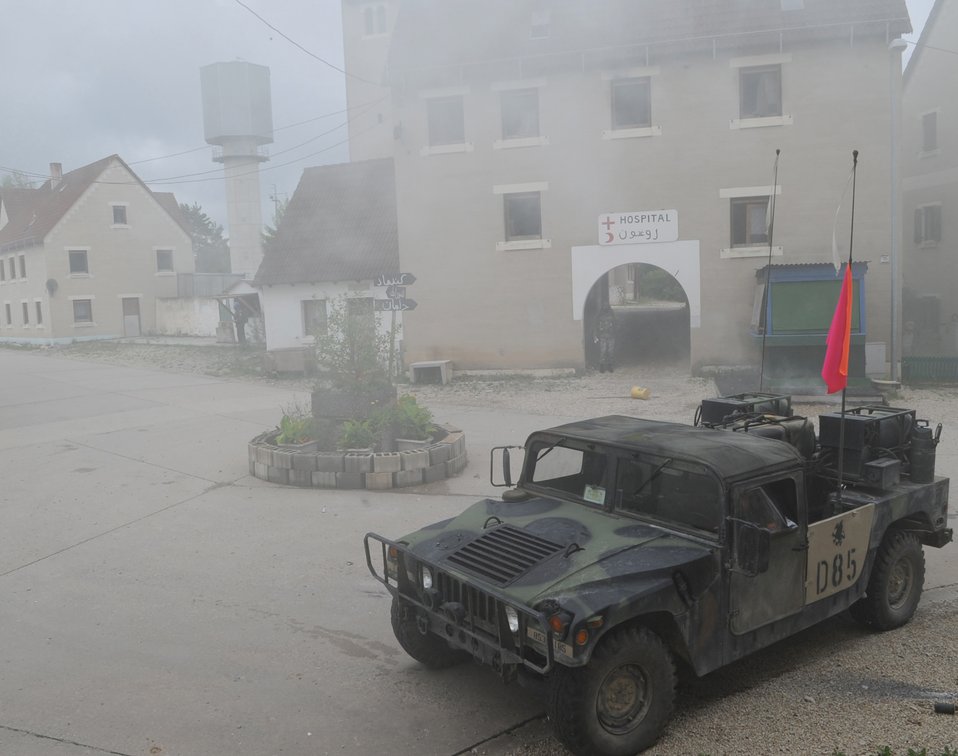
Close air support training

Smoke fills the exercise area Aug. 3, 2010, during exercise Allied Strike 10 at Hohenfels, Germany. The close air support training helps build partnership capacity among allied NATO nations and joint services.